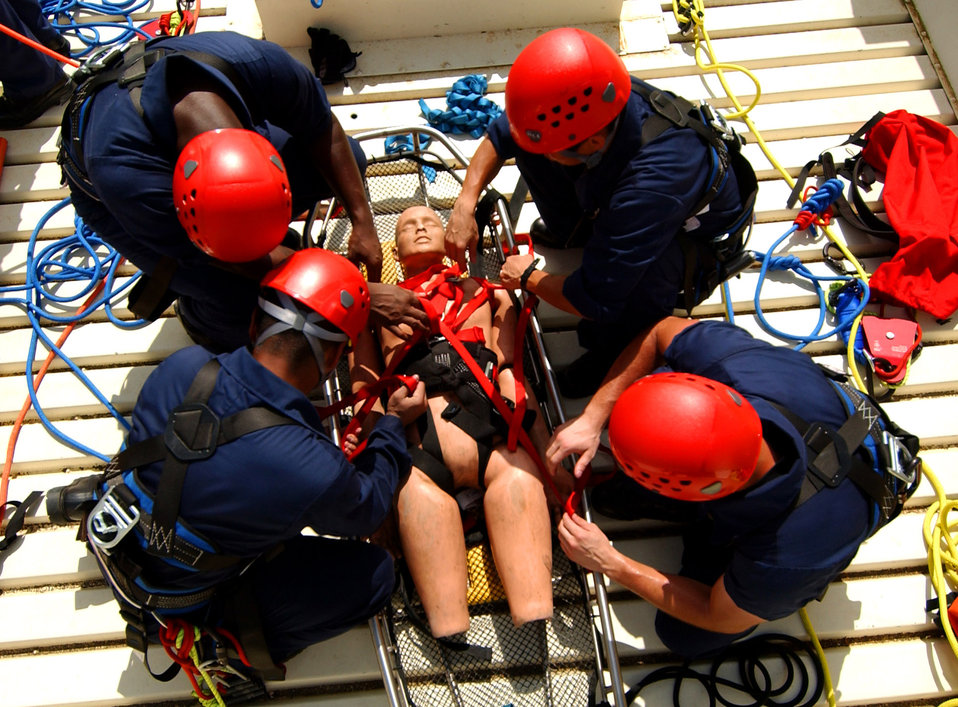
Saving lives, money

Airmen work together to secure a simulated unconscious victim in a stokes basket before lowering off the tower June 17. Airmen around the Pacific took part in the Rescue I course provided by Detachment 1, 554th Rescue Squadron at Kadena Air Base, Japan.